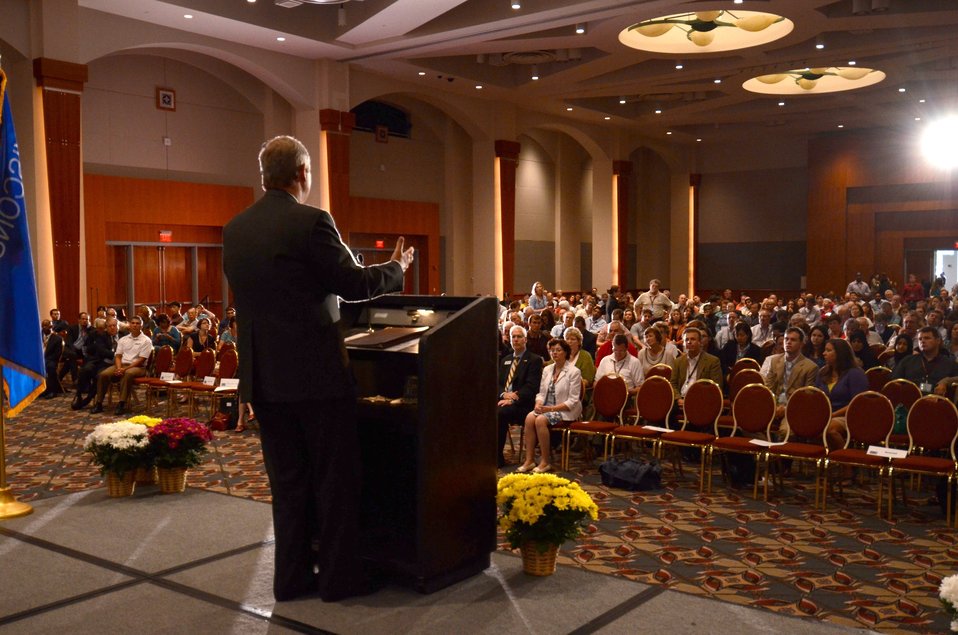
Agriculture Secretary Tom Vilsack speaks at the International Association for Food Protection (IAPP) 100th annual meeting in Milwaukee, WI, on Wednesday, August 3, 2011. IAPP is committed to providing members worldwide with a forum to exchange information on protecting the global food supply.